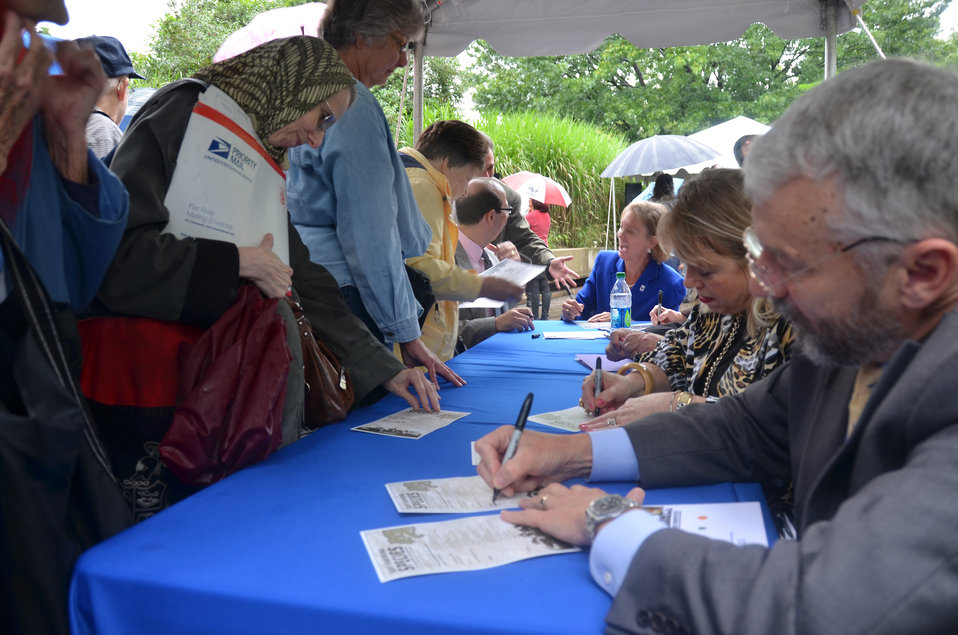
Save Vanishing Species Stamp First Day of Issue